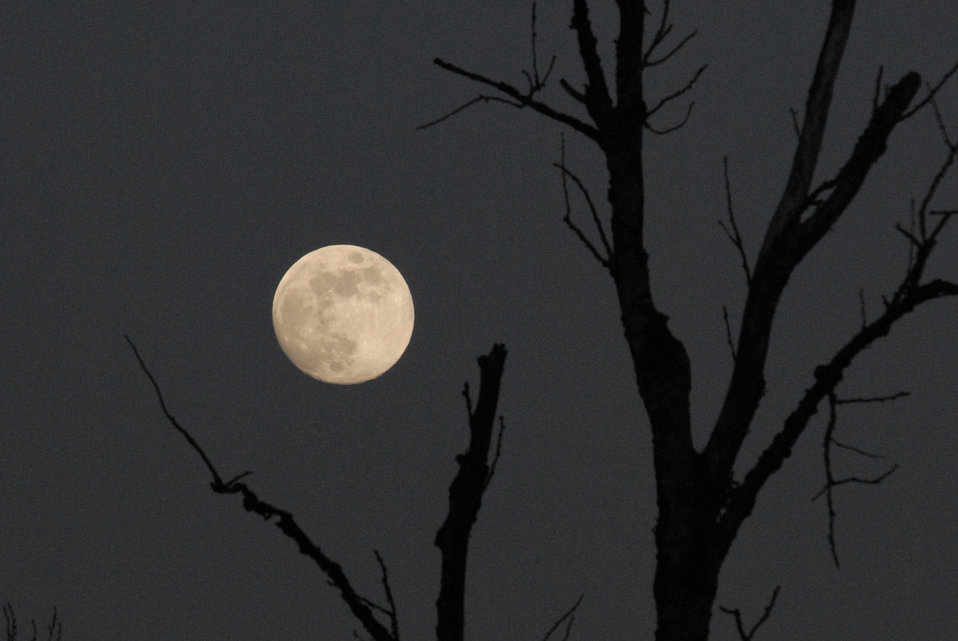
full moon

Ridgefield National Wildlife Refuge, WA
January 2011